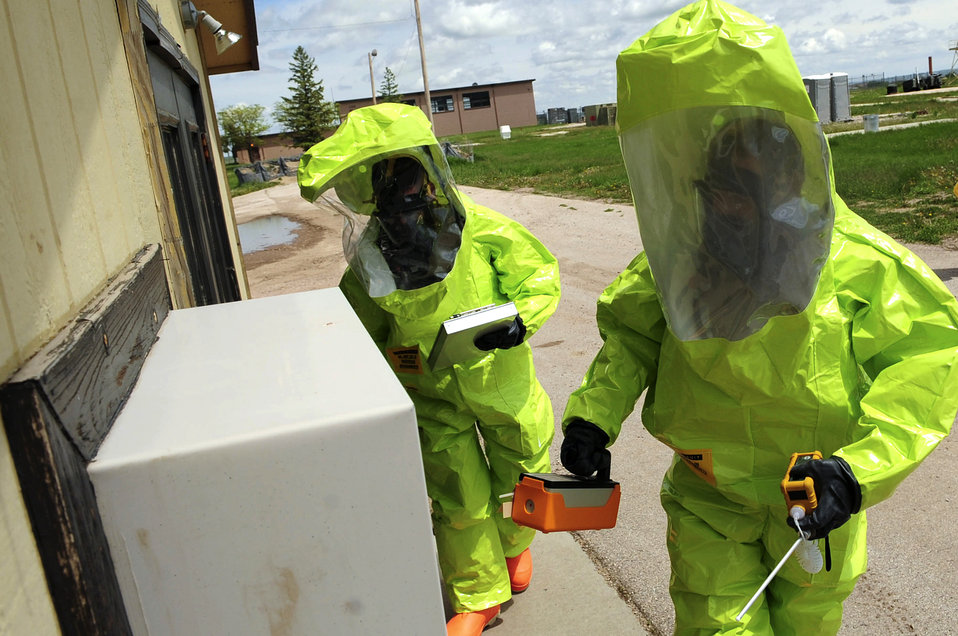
Ellsworth Airmen ready for any emergency

Airmen 1st Class David Jack (right) and Matthew Hung participate in an emergency management exercise, June 3, 2010, at Ellsworth Air Force Base, S.D. Both Airmen are 28th Civil Engineer Squadron emergency management journeymen, and perform chemical, biological, radiological and nuclear detection and decontamination operations.